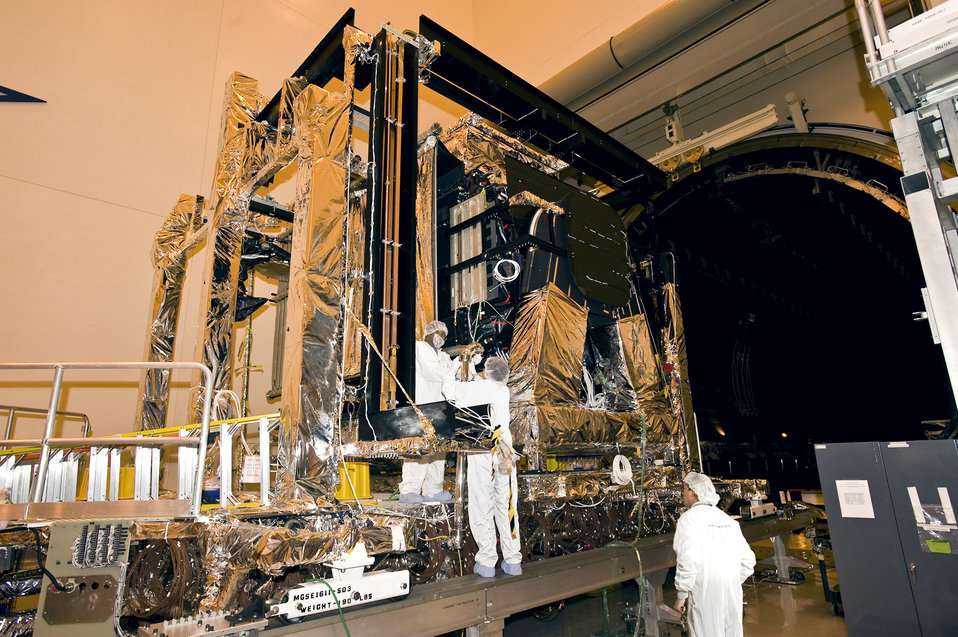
SBIRS GEO-1 Satellite

Space-Based Infrared System GEO-1 Satellite undergoing work at Lockheed Martin Space Systems in Sunnyvale, Calif.